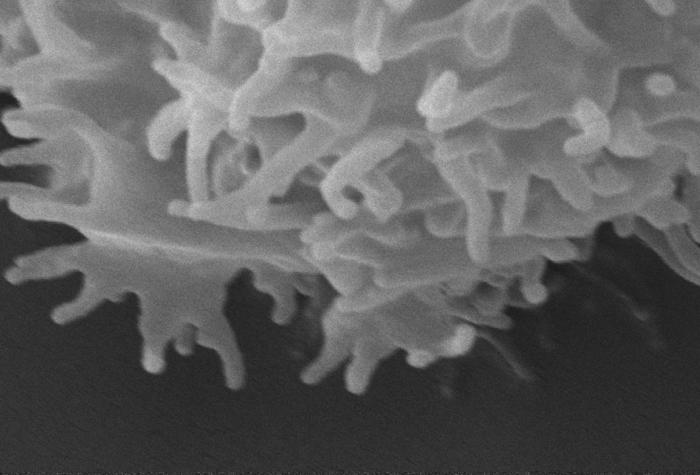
This highly-magnified scanning electron micrograph (SEM) revealed some of the ultrastructural features seen on the surface of an Acanthamoeba polyphaga protozoan. Note the numerous projecting pseudopodia, from the Latin pseudo = false, and podia = feet, which extend from the organism's surface. These enable the amoeba to move about, and grasp objects in its environment.